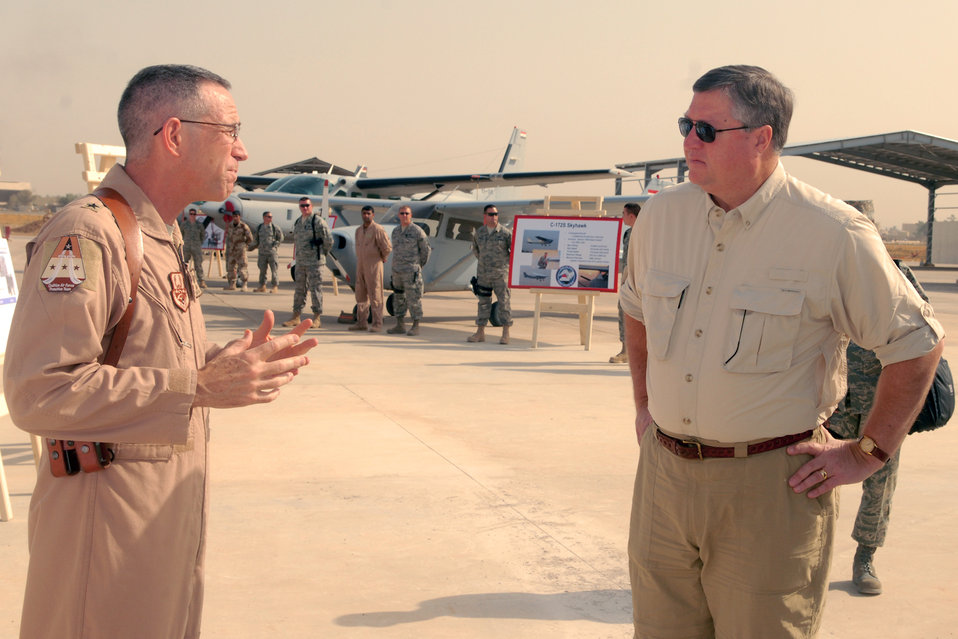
SECAF visits Kirkuk

Brig. Gen. Brooks Bash, Coalition Air Force Transition Team commander, briefs Secretary of the Air Force Michael Donley about the CAFTT mission during his visit to Kirkuk Regional Air Base, Iraq, Oct. 14. The secretary toured various facilities and spoke to Airmen about his vision for the overall mission within the AOR and the future of the Air Force.